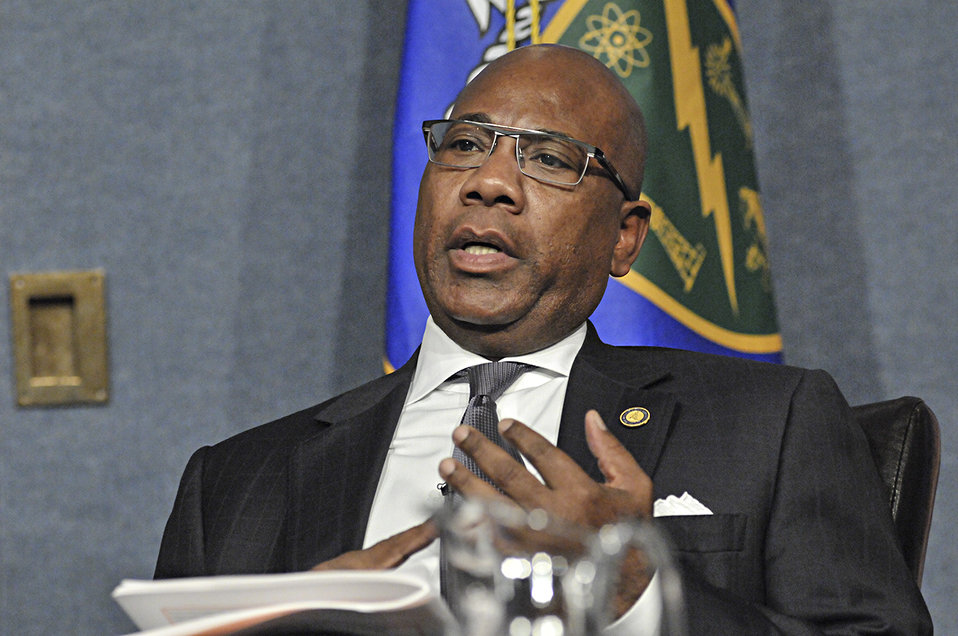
Panel: Increasing Minority Participation in the Energy Sector

Dr. David Wilson, President of Morgan State University, speaks at the launch of Minorities in Energy Initiative on September 24, 2013.